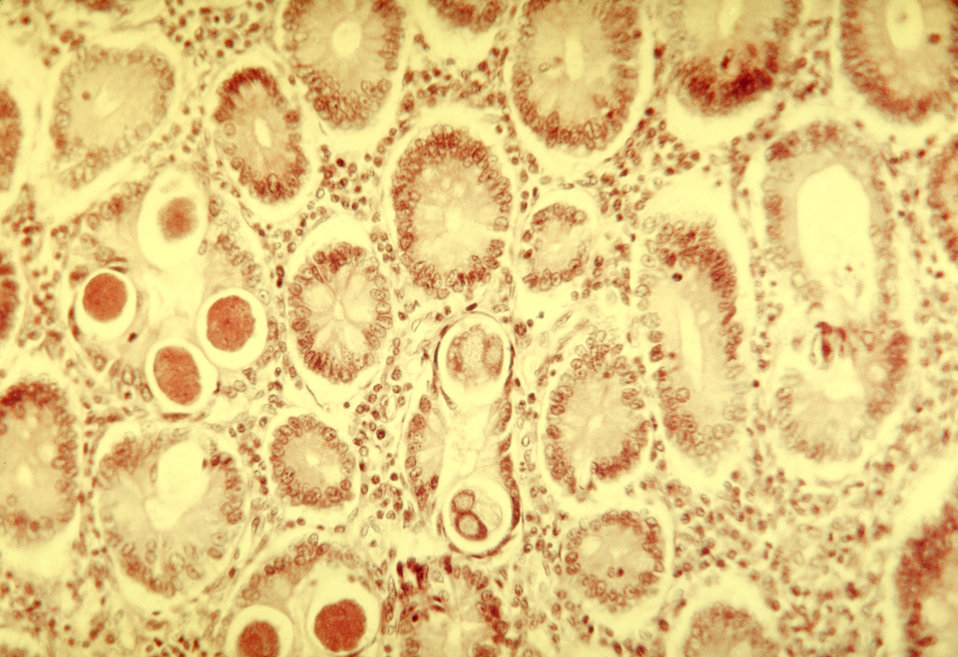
This photomicrograph depicted numbers of Strongyloides parasites found inside an intestinal tissue specimen..